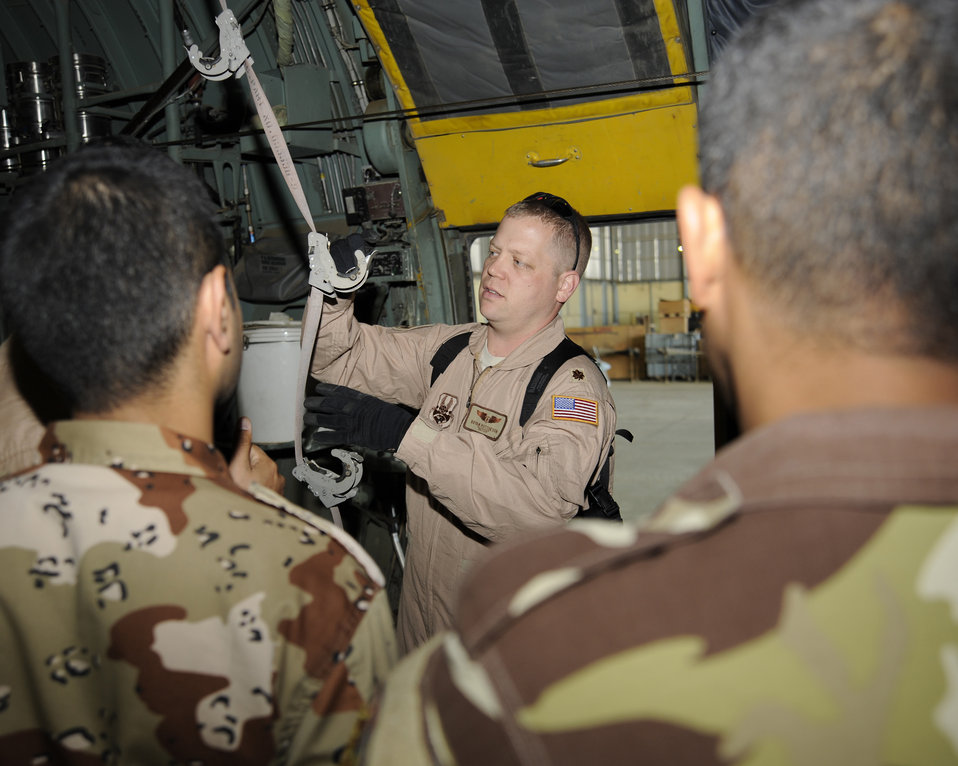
Iraqi medics complete aeromedical evacuation course

Maj. Bryan Hutcheson shows how to inspect the different parts used to secure litters in a C-130 Hercules aircraft at New Al-Muthana Air Base, Iraq, Dec. 3. Major Hutcheson is the aeromedical evacuation basics course director and is deployed from the United States Air Force School of Aerospace Medicine in San Antonio.